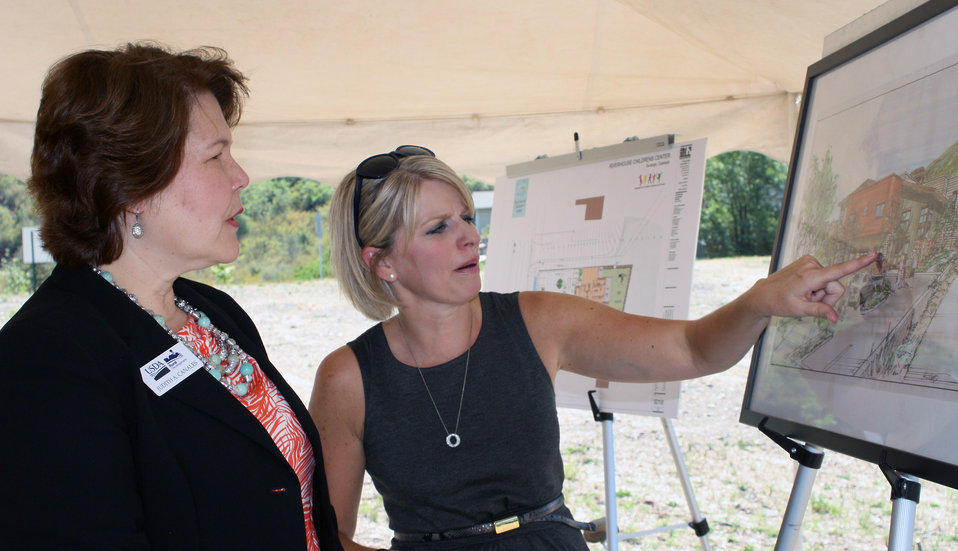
U.S. Department of Agriculture (USDA) Rural Development (RD) Business and Cooperative Programs Administrator Judith Canales (left) and President of the Board of Directors Kim Barker discuss the plans for the new $1.6 million in Community Facility loan funding for the Riverhouse Children’s Center in Durango, CO on Thursday, Aug. 30, 2012.